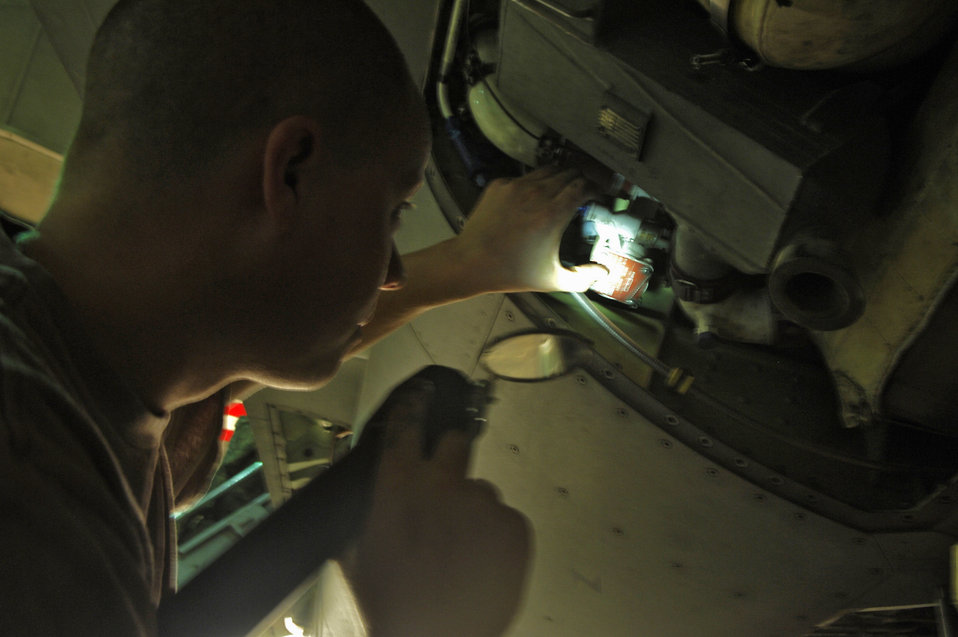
Aircraft maintainers contribute to GWOT milestone

Staff Sgt. Daniel Crane takes a look inside one of the panels of an F-16 Fighting Falcon at Balad Air Base, Iraq, April 19. Maintainers like Sergeant Crane have helped the Air Force generate 1 million sorties, operational flying missions, since the start of the war on terrorism. Sergeant Crane is a 332nd Aircraft Maintenance Squadron phase section floor chief.